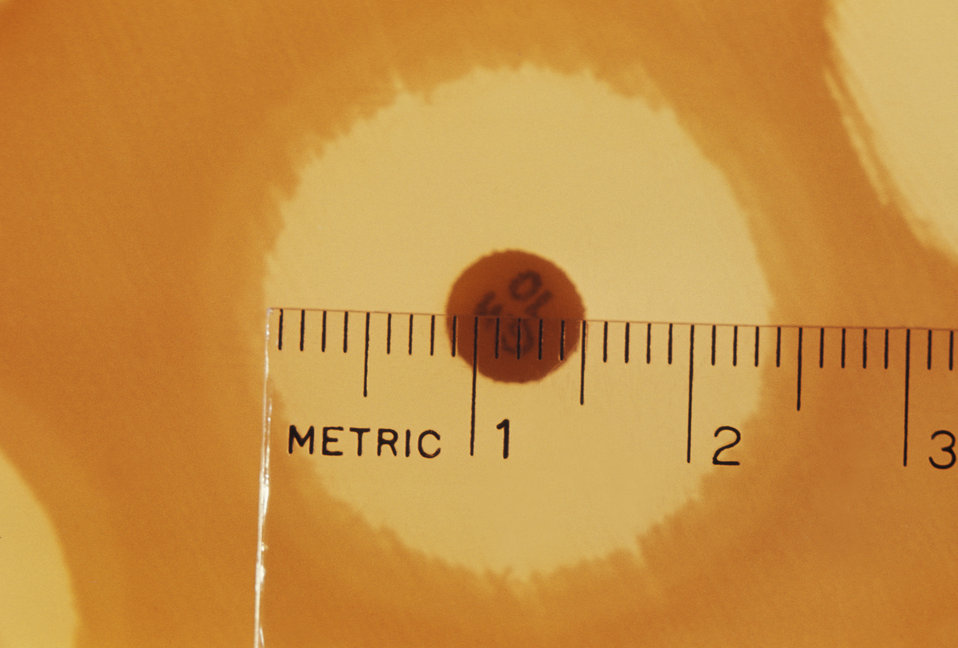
This image shows a lab technician measuring the zone of inhibition during an antibiotic sensitivity test.